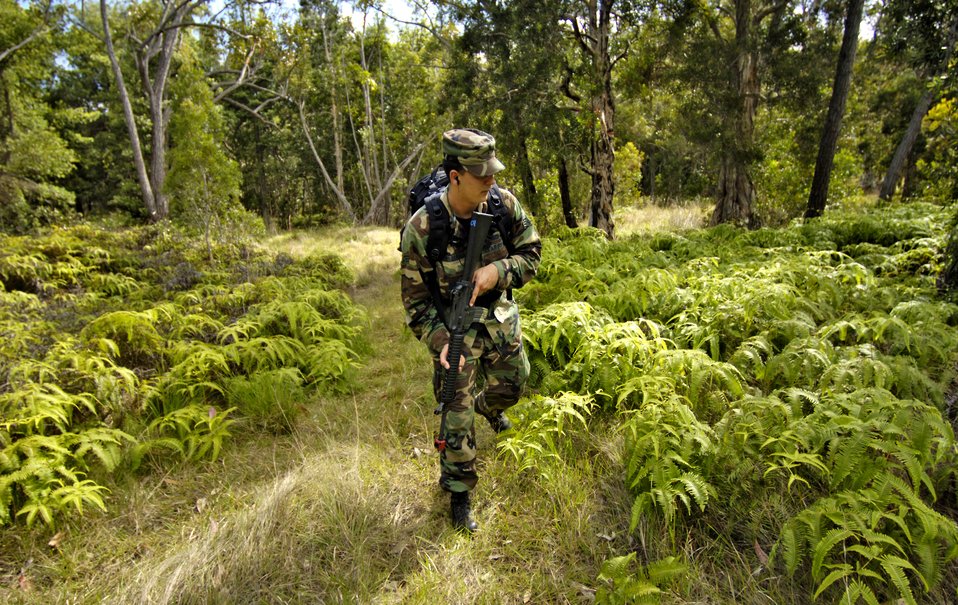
Survival refresher course

Senior Airman Ryan Gentzler, acting as an